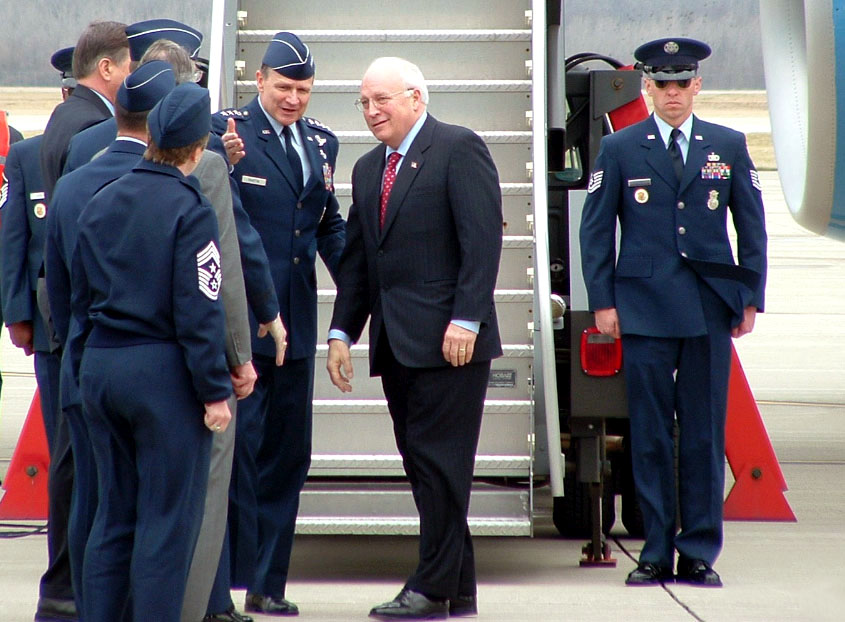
Cheney visits Ohio base

WRIGHT-PATTERSON AIR FORCE BASE, Ohio -- Gen. Greg Martin, commander of Air Force Materiel Command, greets Vice President Dick Cheney and introduces him to other base officials March 26 on the flightline here.